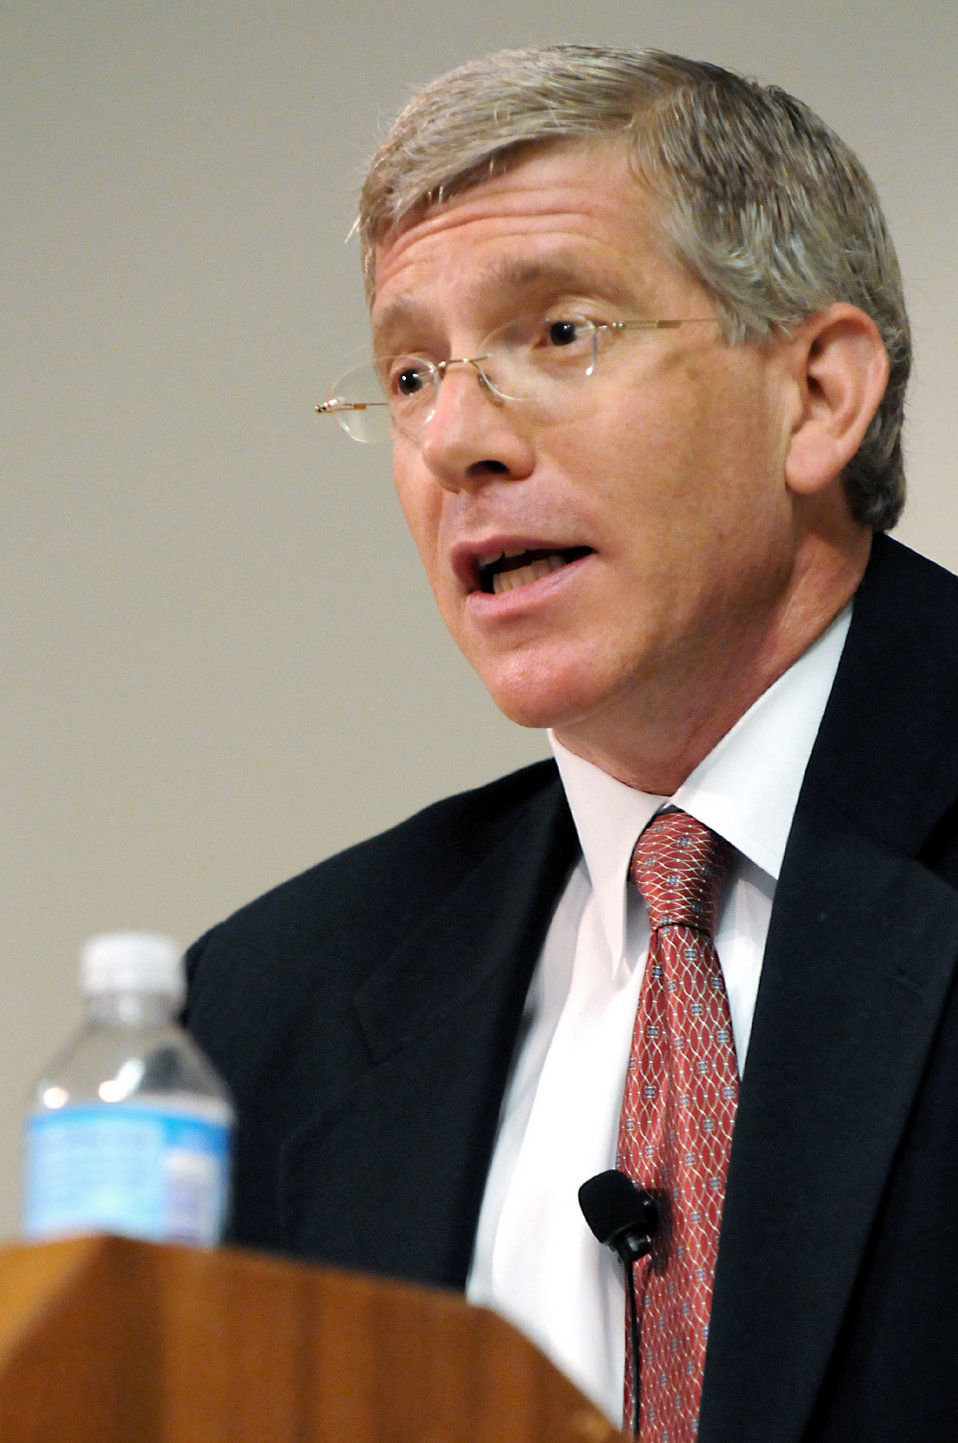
Deputy Secretary Poneman speaks to a full house

Deputy Secretary of Energy Daniel Poneman speaks to a full house at Argonne National Laboratory